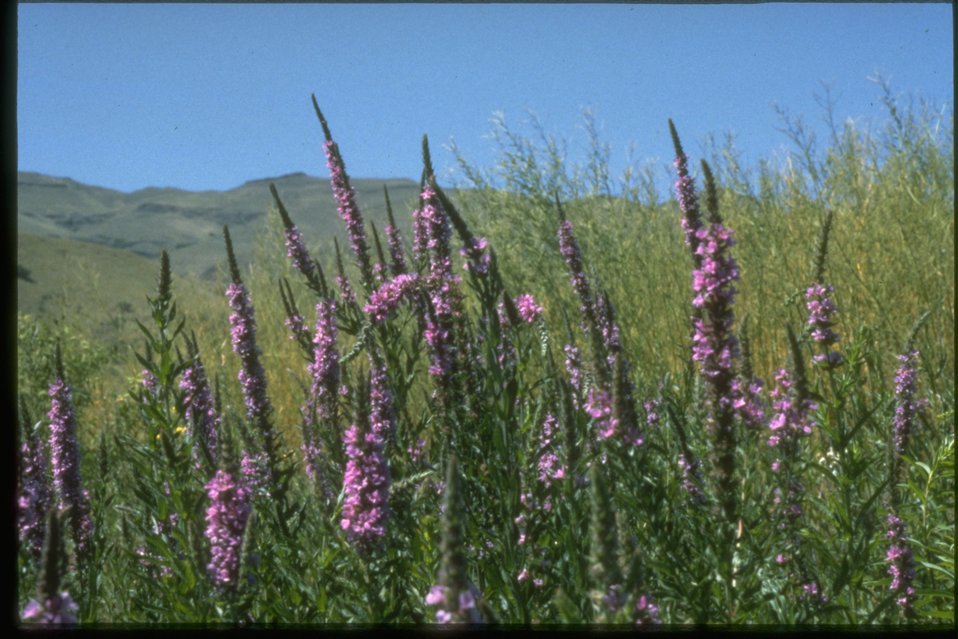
Purple Loosestrife flowers.